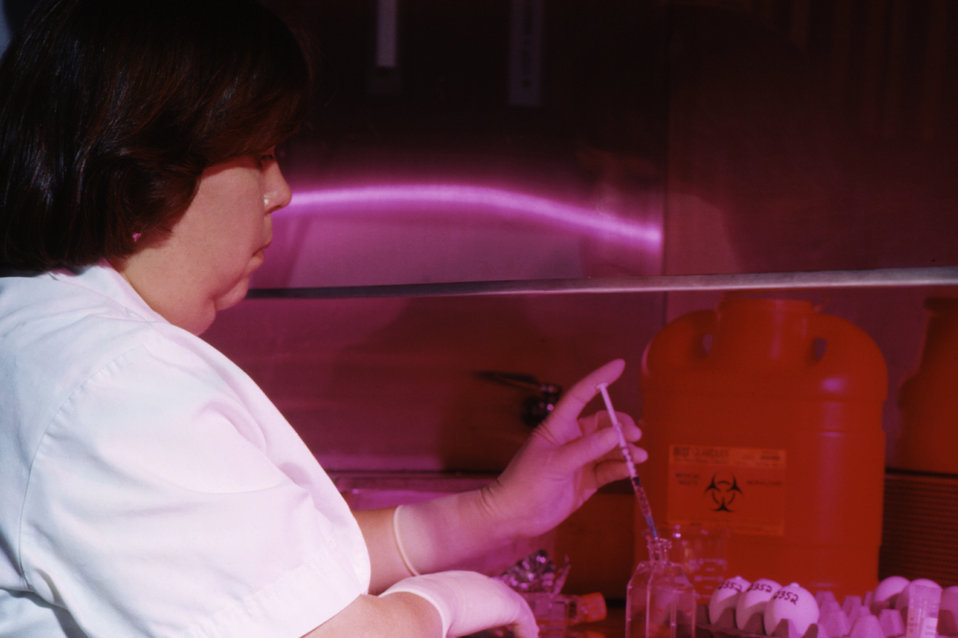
This lab technician is performing lab tests involving chicken egg inoculations.